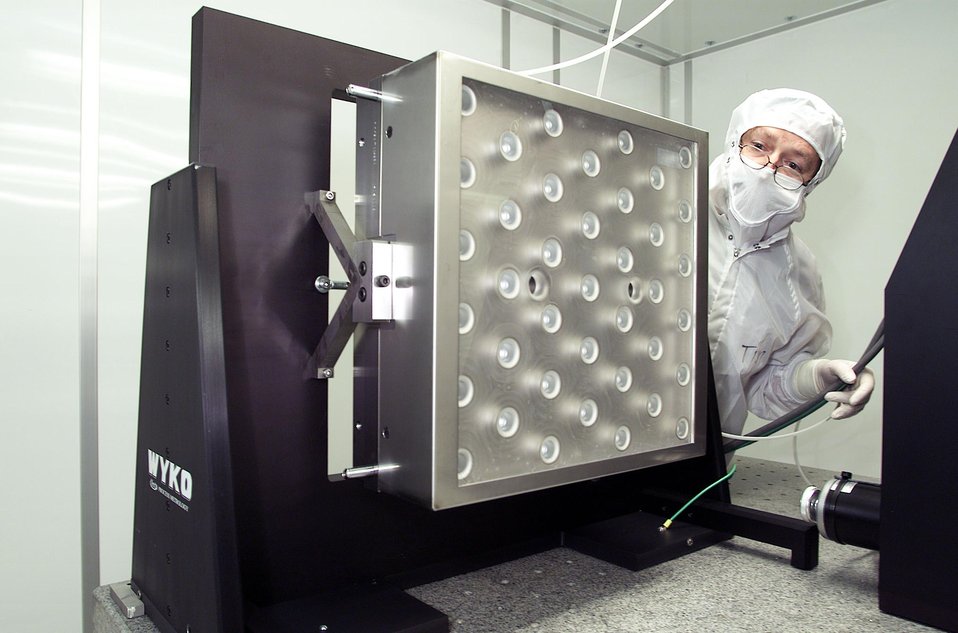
CHECKING A LARGE-APERTURE DEFORMABLE MIRROR TO BE USED FOR WAVE-FRONT CONTROL IN THE MAIN LASER CAVITY.

THE NATIONAL IGNITION FACILITY AT LLNL ENABLES KEY PROGRAMS AND TECHNOLOGIES THAT SUPPORT DOE'S NATIONAL NUCLEAR SECURITY ADMINISTRATION DEFENSE PROGRAMS AND LLNL MISSIONS, ENSURING THAT THE NATION'S NUCLEAR WEAPONS REMAIN SAFE, SECURE AND RELIABLE. NIF, ONE OF THE CORNERSTONES OF DOE'S STOCKPILE STEWARDSHIP PROGRAM, WILL INTEGRATE THE INERTIAL CONFINEMENT FUSION PROGRAM INTO THE OVERALL STOCKPILE STEWARDSHIP PROGRAM AND FOSTER THE DEVELOPMENT OF ASSOCIATED LASER TECHNOLOGIES.